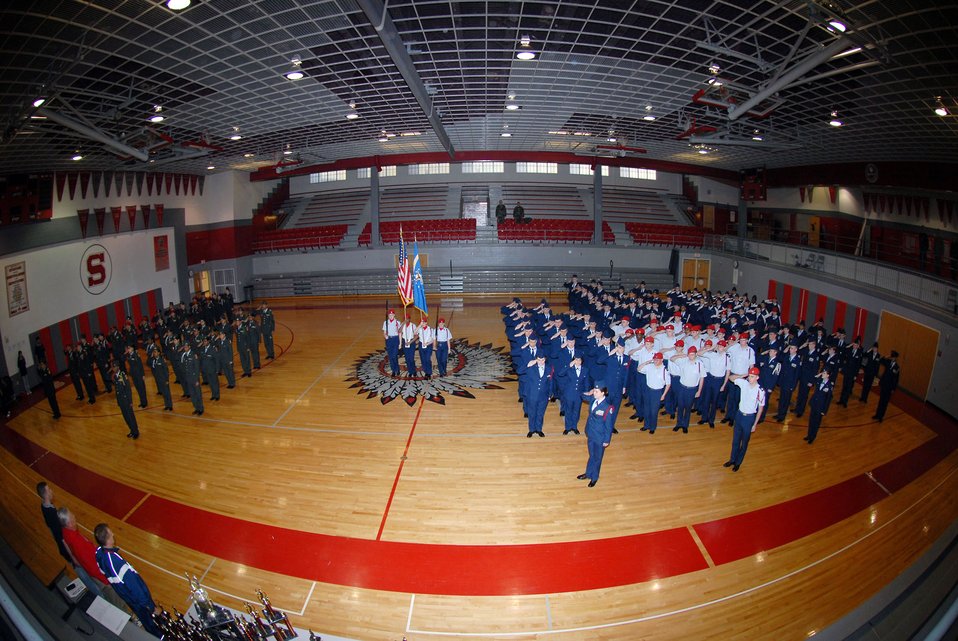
Airmen judge junior ROTC drill competition

Two hundred Air Force and Army Junior ROTC cadets from eight high schools participate in the opening ceremony of the 15th Annual Memorial Junior ROTC Drill Championships March 29 at Walter E. Stebbins High School in Riverside, Ohio. Nineteen military members from the National Air and Space Intelligence Center from Wright-Patterson Air Force Base, Ohio, volunteered to be judges and work in other support positions during the competition.